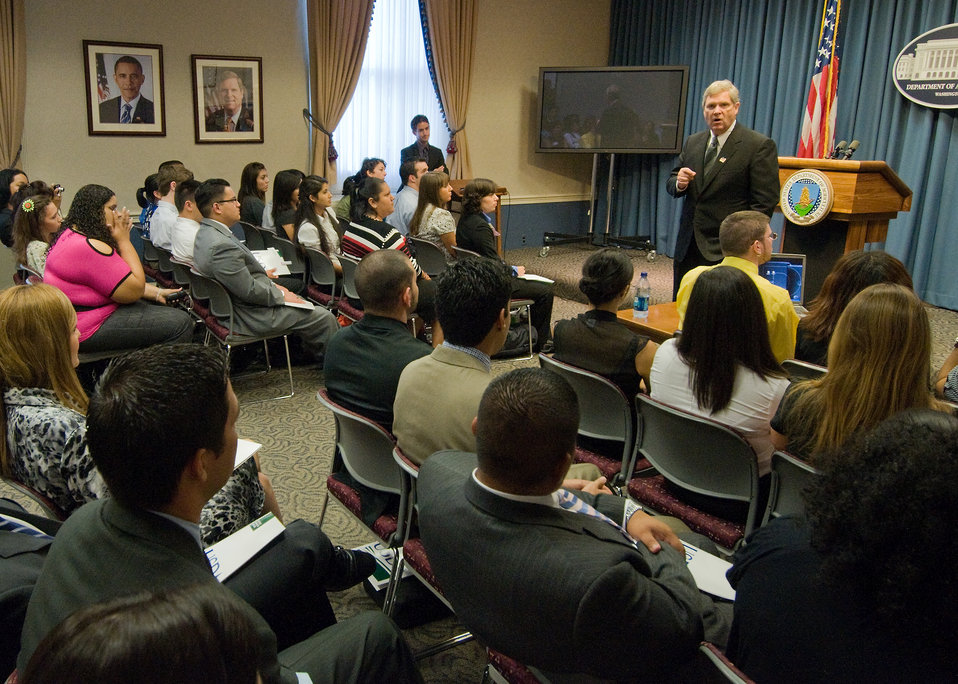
Agriculture Secretary Tom Vilsack was the keynote Speaker at the USDA HACU and 1994 Tribal College Summer Internship Orientation Program at the Department of Agriculture in Washington, DC, Monday, June 7, 2010. USDA Photo 10di1391-22.